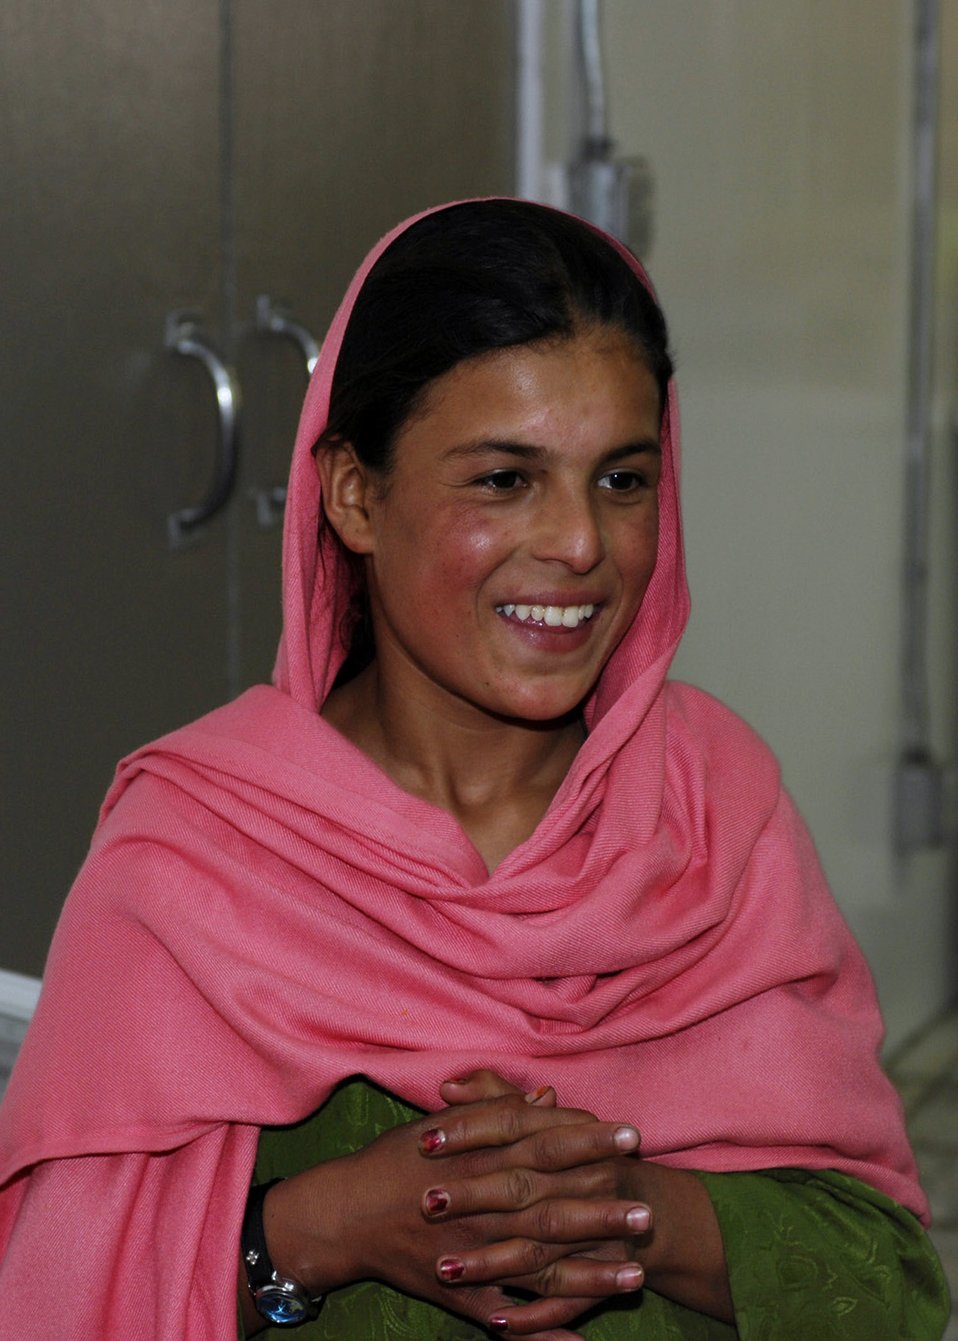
AFRC commander presents goods to Afghan girl, village

Lamia, a 10-year-old Afghan girl from Shakal Village in Afghanistan, shows her appreciation to the donated items sent from Jan Bradley, wife of Lt. Gen. John Bradley, Air Force Reserve Command commander. Mrs. Bradley spearheaded a donation drive that provided several boxes of housewares, clothing, shoes, toys and toiletries that were presented here May 30.